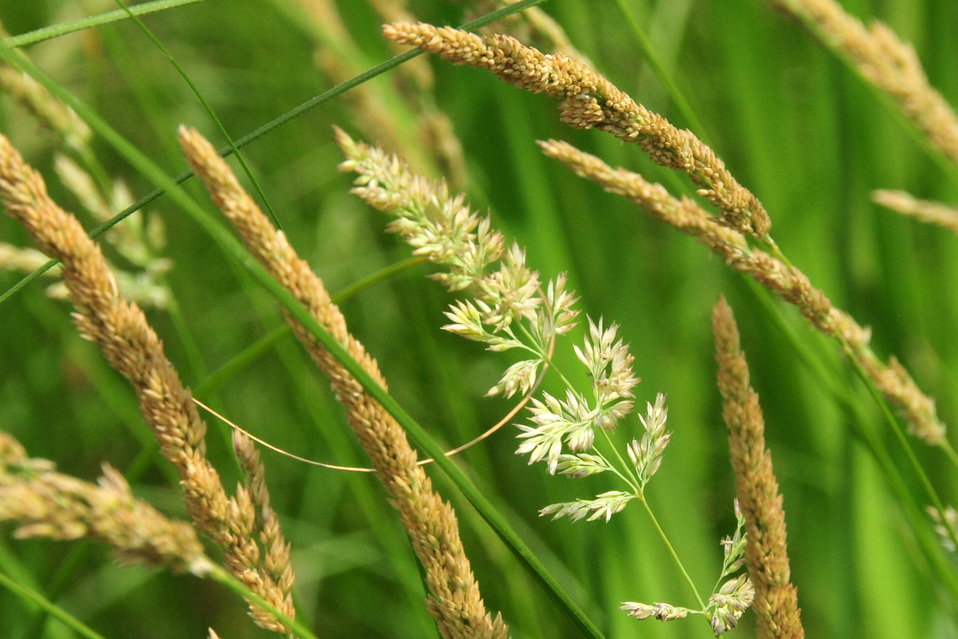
Canada bluejoint (Calamagrostis canadensis) Sand Lake Wetland Management District 01

Other common names include bluejoint, bluejoint reedgrass, Canadian reedgrass, meadow pinegrass, and marsh reedgrass. It is found in high quality wet meadows and wet prairies in tall and mixed grass prairies in the Prairie Pothole Region. Bluejoint is a long lived, perennial cool season grass with stout stems. It is used in wetland restoration and enhancement as well as shoreline and streambank stabilization. Creeping underground shoots (rhizomes) improve the plants ability to bind soil, especially along higher gradient streams and waterways. It is included in hydroseeding mixtures for drainage ditches designed to filter stormwater. This species provides forage for bison, deer, small mammals, waterfowl, and other bird species.
Bluejoint occurs from low to mid-elevation across most of Canada and the United States, except for the Southeast.